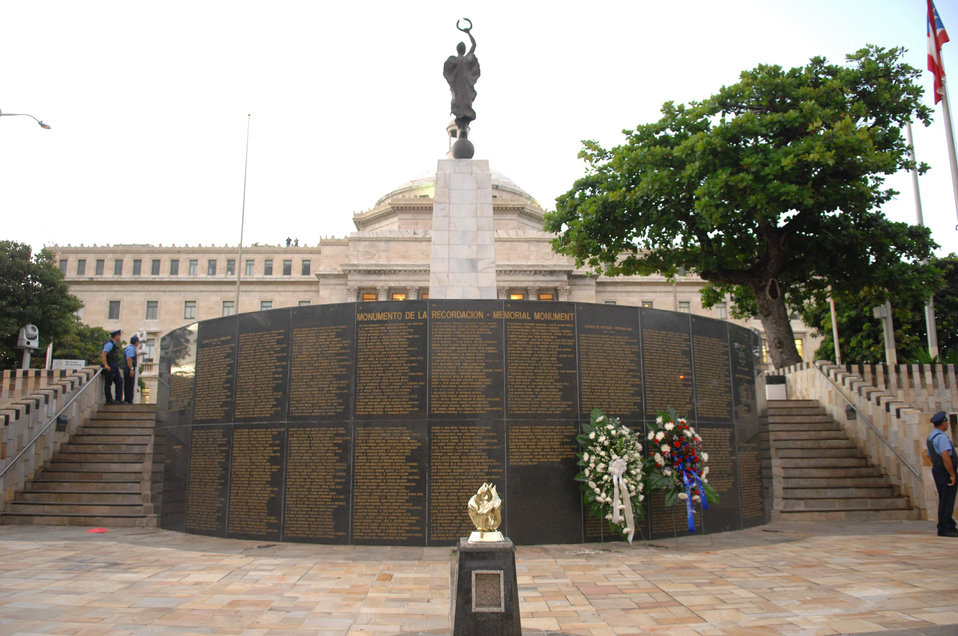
Reservists honor fallen servicemembers

Wreaths placed by the Commonwealth of Puerto Rico and the League of United Latin American Citizens stand in front of El Capitolio 's El Monumento de la Recordacion as part of the Memorial Ceremony in Old San Juan, Puerto Rico, the location of the 2009 LULAC Convention and Exposition July 14 at San Juan, Puerto Rico. LULAC is the nation's oldest and largest Hispanic organization advocating for Latinos in the United States for 80 years.